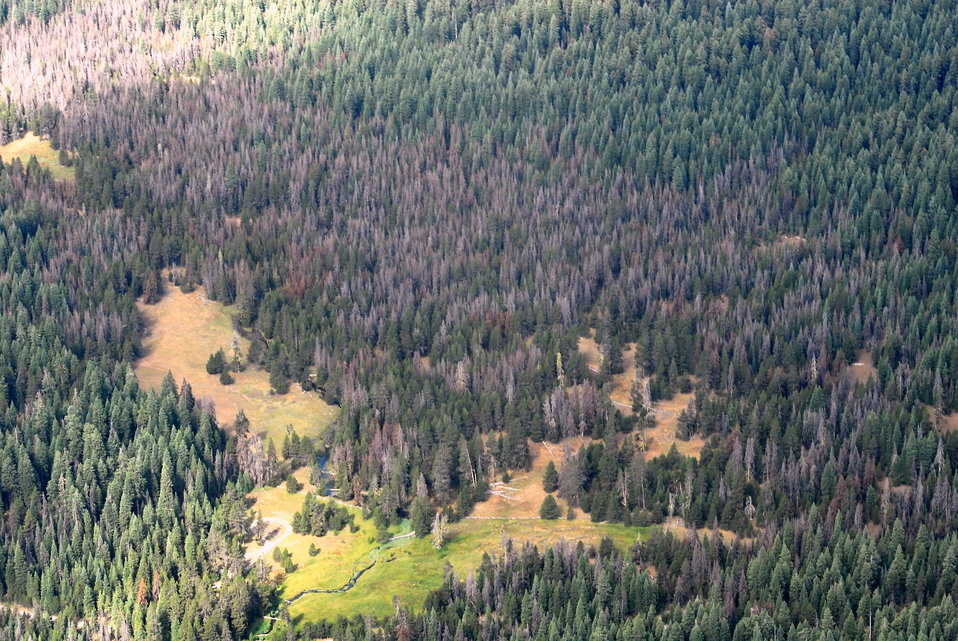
fhp4

The Mountain pine beetle has damaged more than 2 million acres of lodgepole pine forest on the Klamath National Forest in California.